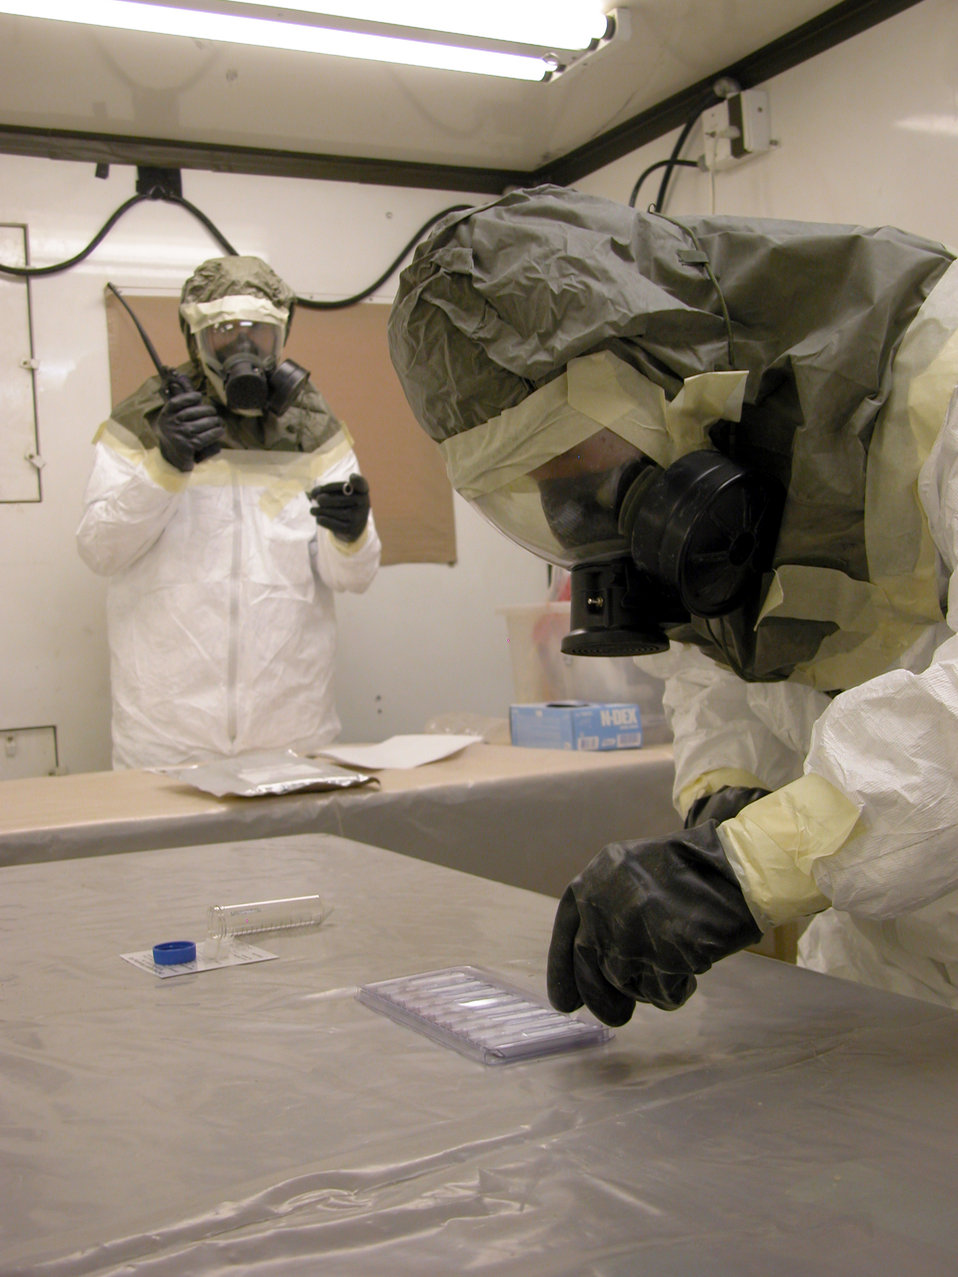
Checking for NBC

TALLIL AIR BASE, Iraq -- Senior Airman Joshua Burns (right) drops samples of a training agent into a biological-testing kit while Staff Sgt. William Hall uses a stopwatch and notifies the control center of the test start time. Airman Burns is deployed here from Royal Air Force Lakenheath, England, and Sergeant Hall is from Aviano Air Base, Italy. Both are readiness journeymen trained to detect nuclear, biological and chemical agents.